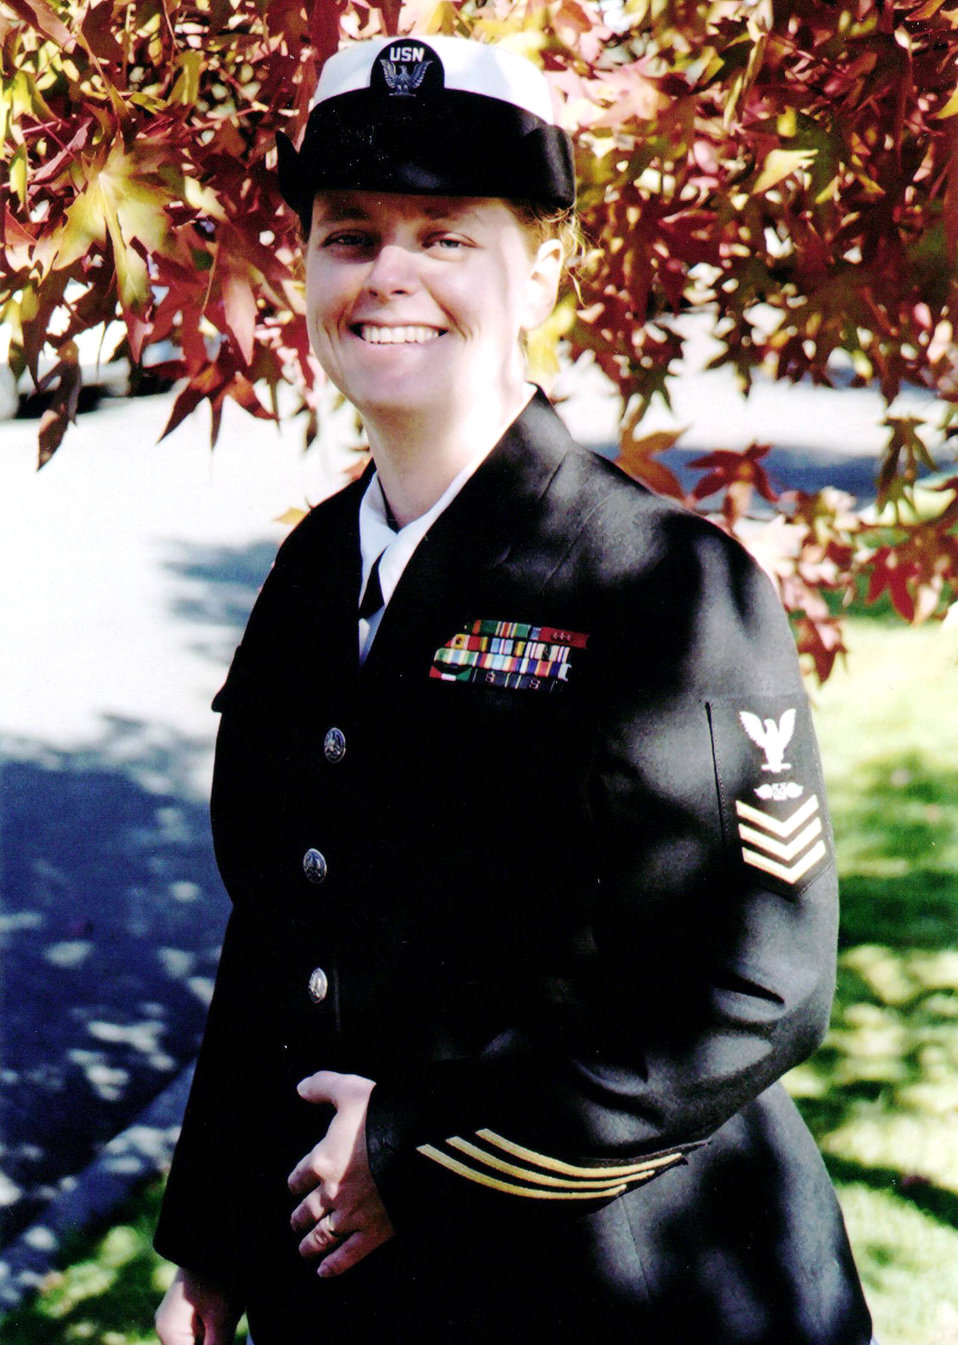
Kelly Herrmann, an Assistant Administrative Officer in Ecological Services in Region 3, served in the Navy.